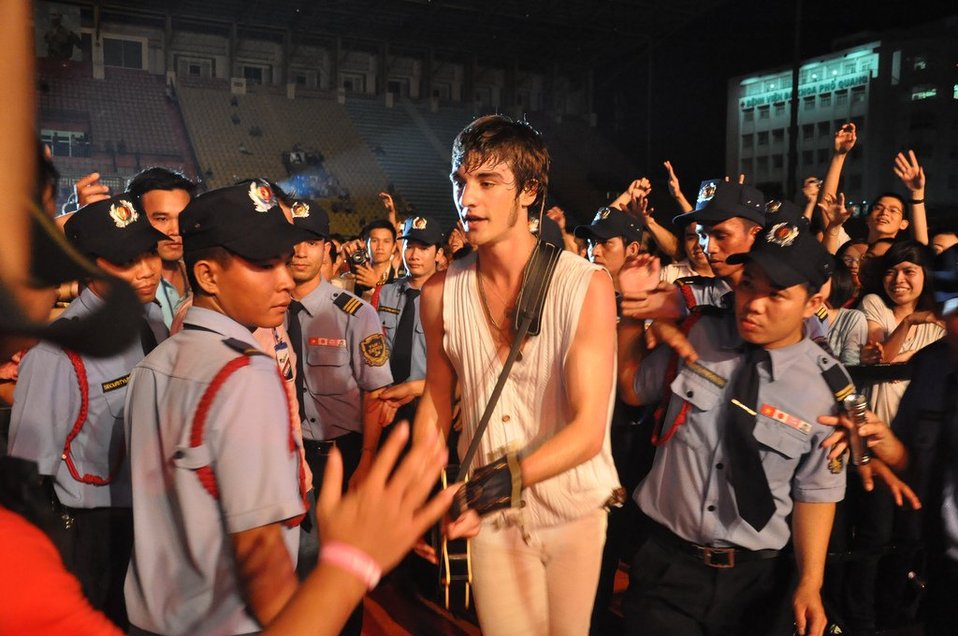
USAID, MTV EXIT concert series in Vietnam, 2010.

The Click Five performs in Ho Chi Minh City on April 17 as part of the USAID, MTV EXIT concert series.